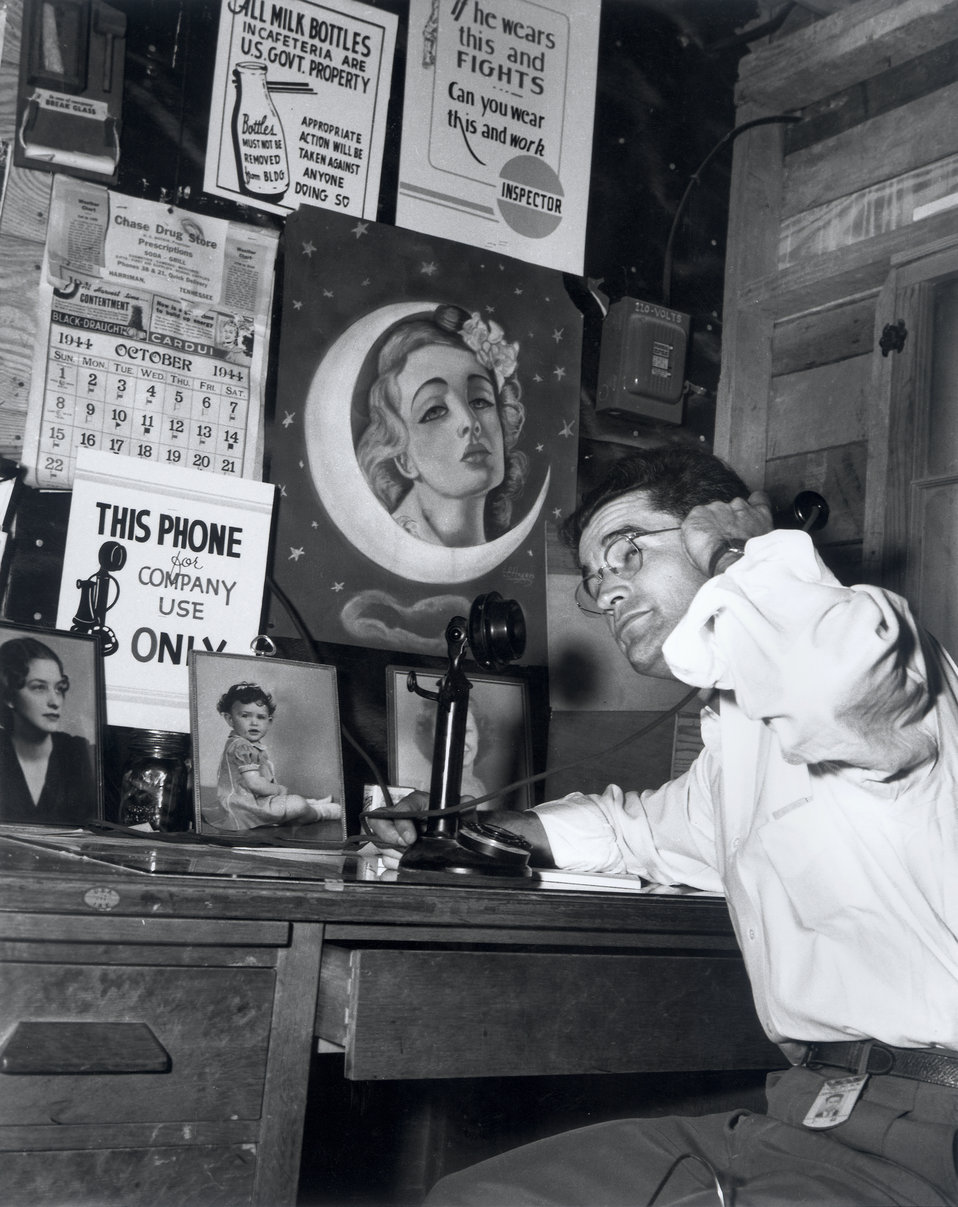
Man On Telephone Oak Ridge

PRO73 DOE photo by Ed Westcott

Man On Telephone Oak Ridge Tennessee 10-5-1944